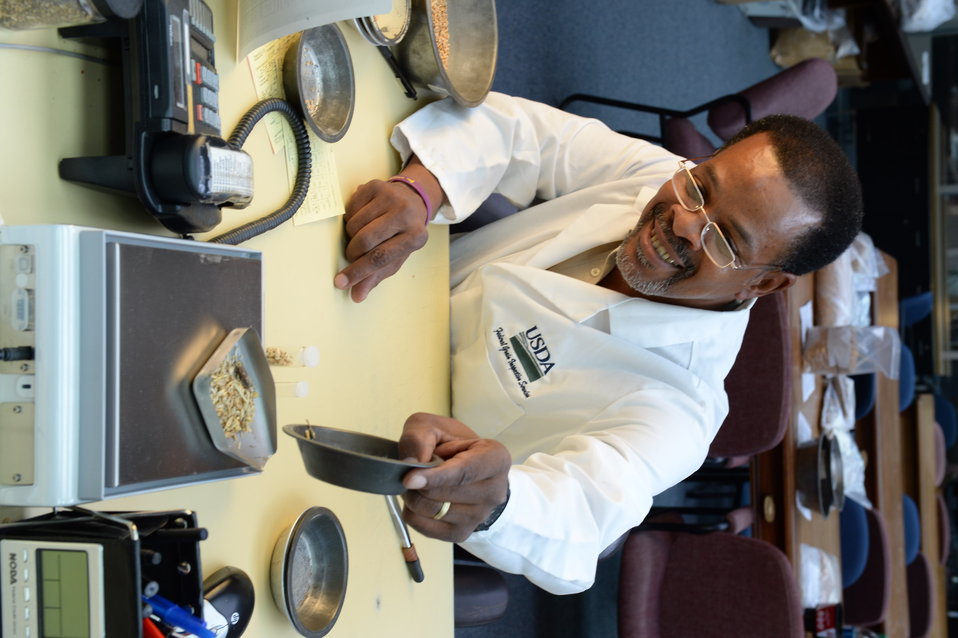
A U.S. Department of Agriculture (USDA) Grain Inspection, Packers and Stockyards Administration (GIPSA) Federal Grain Inspection Service (FGIS) scientist tests wheat at the FGIS inspection laboratory in New Orleans, LA on Monday, Nov. 18, 2013.